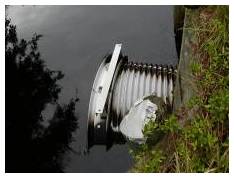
Water control

Before the land became a refuge, it was used for farming. Ditches were built across it to help with irrigation. Now those ditches are a problem, serving as a delivery system that brings the sea deep into the peninsula and changes plant communities. Water control structures like this one are trying to mimic the water’s natural flow.